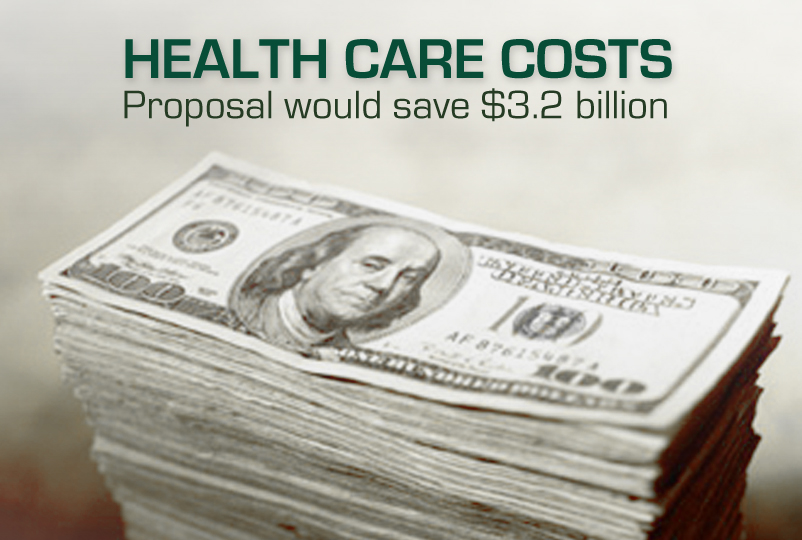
Health Care Costs